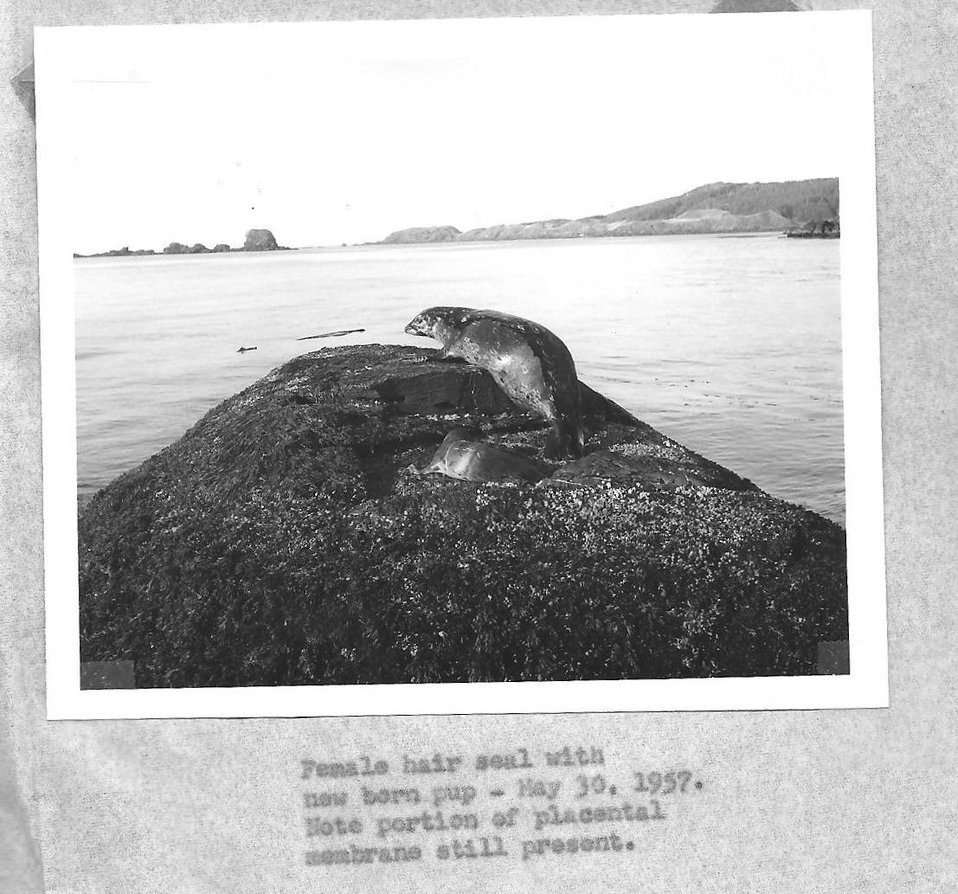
(1957) Hair Seal and Pup

Credit: USFWS

Source and Contact: Kodiak National Wildlife Refuge